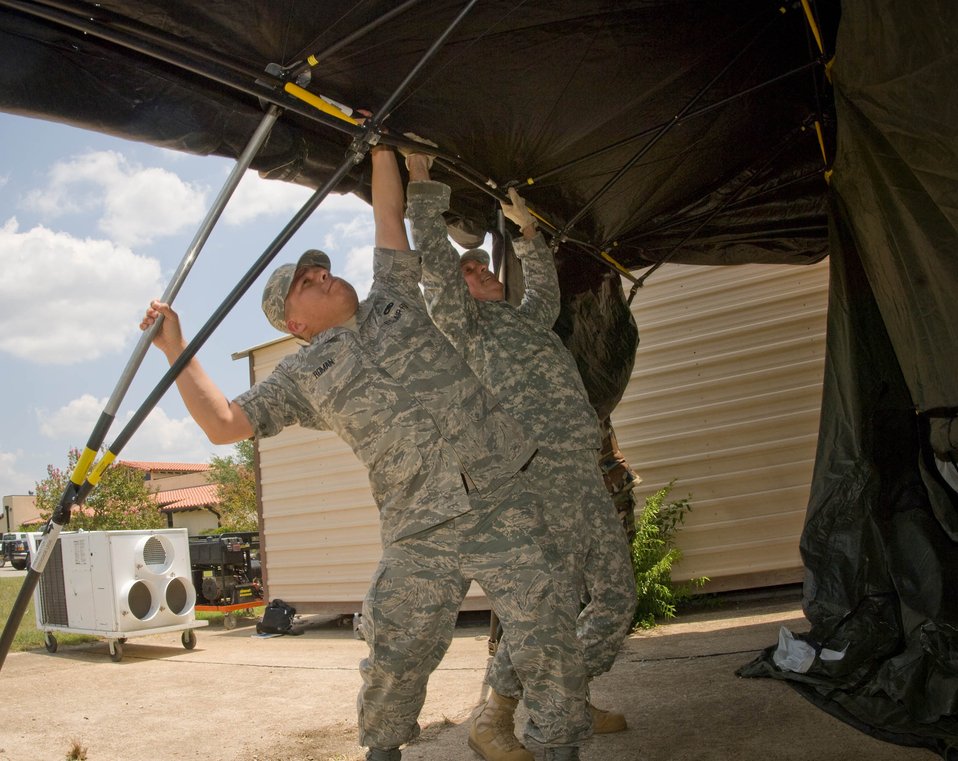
Joint Teams prepare for Hurricane Dolly

Staff Sgts. Gonzalo Roman and Robert Ribeiro setup a base-X tent, part of the Joint Incident Communications Capability (JICC) that will provide video teleconference, satellite and cellular communications next to the Emergency Operations Center at Brooks City-Base in San Antonio July 22. The Texas Army National Guard is part of the Standing Joint Interagency Task Force-Texas at Camp Mabry, Texas. Sergeant Ribeiro is from the Texas Army National Guard's Bee Caves Armory, Austin, Texas. Sergeant Roman is from the Air National Guard's 149th Communications Flight at Lackland Air Force Base, Texas. Once completed the JICC will provide 2000 sq. ft. of portable or tented floor space on the lawns in front of the EOC.